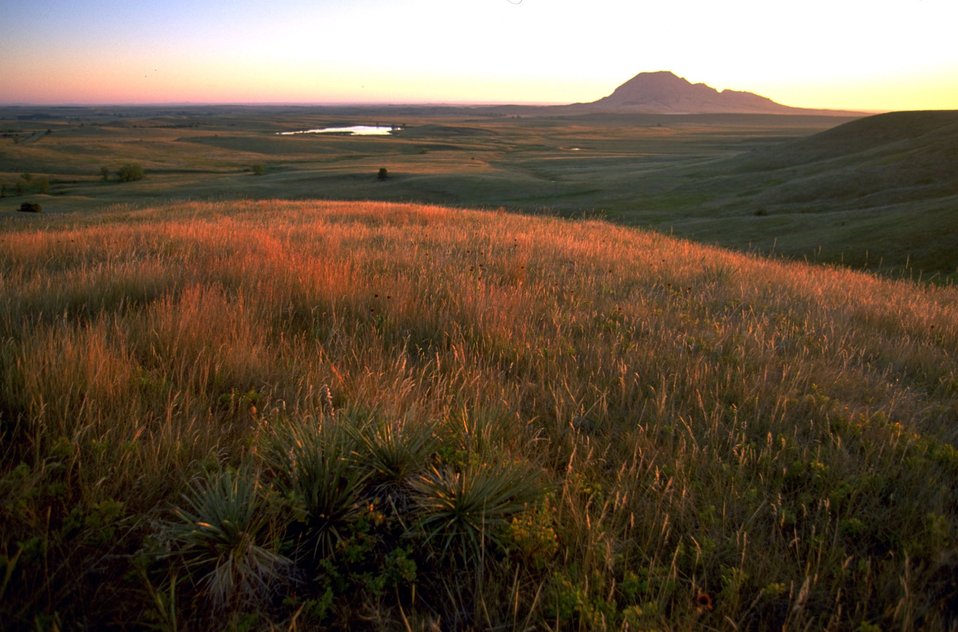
North end of Fort Meade with Bear Butte in the background